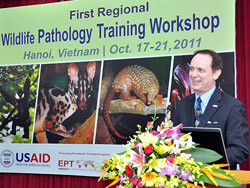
USAID EPT Smithsonian Pathology Training to Detect Emerging Infectious Diseases Wildlife and Other Animals in Vietnam Workshop

USAID/Vietnam Mission Director Francis Donovan.